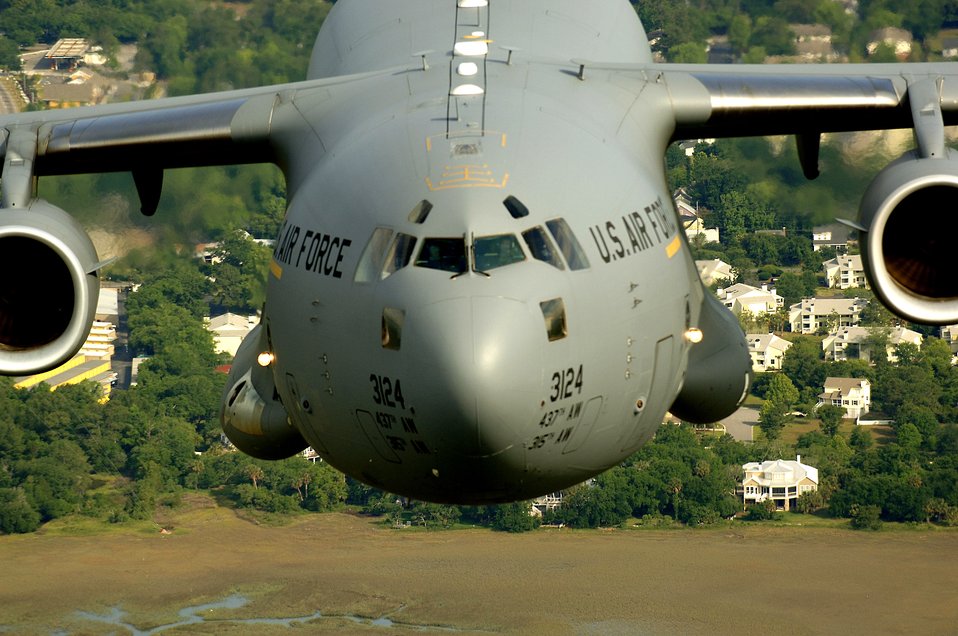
C-17s over Charleston

A C-17 Globemaster III from the 14th Airlift Squadron, Charleston Air Force Base, S.C., flies low over the Charleston, S.C., area during a training mission on Tuesday, May 16, 2006.